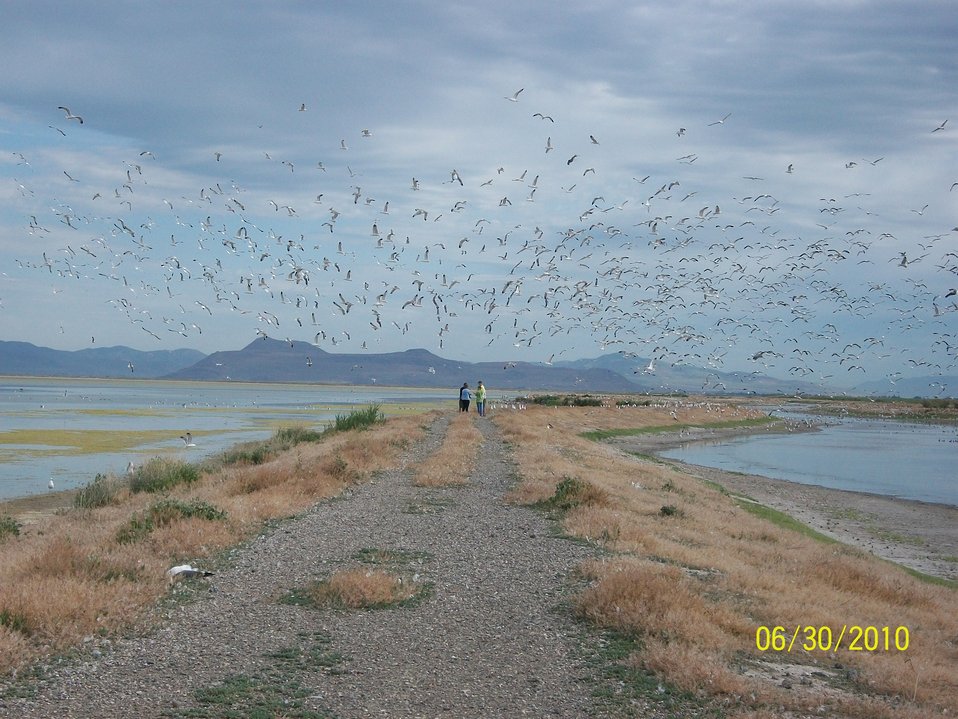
Youth and Gulls

Youth Conservation Corps students monitor gulls at Bear River Migratory Bird Refuge in Utah. Monitoring results will contribute to management's determination of impacts the gulls are having on other colonial nesting birds at the Refuge.